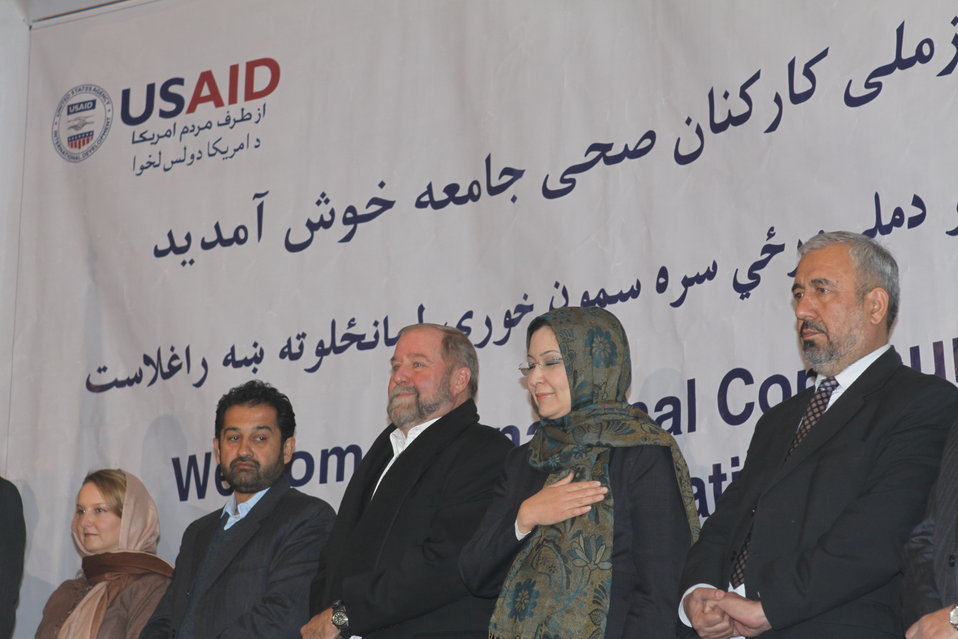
Community Health Workers Celebrated

Kabul, Afghanistan | December 5, 2010 — In support of the United Nations designated International Volunteer Day for Economic and Social Development, Afghanistan’s Ministry of Public Health celebrated its annual Community Health Worker Day today. Acting Minister of Public Health Dr. Suraya Dalil, USAID Senior Deputy Mission Director Robert Hellyer, other government officials, and international donors joined in recognizing the critical contribution of community health workers in Afghanistan and encouraging them to continue their voluntary support to their communities.
The event praised the contributions of the more than 22,000 volunteers throughout the country who deliver community level health-education, counseling, and services out of village health posts located in private homes. The Ministry of Public Health envisioned that community-based healthcare programs will actively encourage communities and families to adopt healthy lifestyles and behaviors, and provide families access to high quality and socially acceptable preventative medicine and life-saving services.
“We have 22,000 community health workers in Afghanistan that are able to implement the basic and standard medicines. They all have been trained through a job description,” said Minister Dalil. Addressing the health workers, she added, “I am proud and feel powerful that I have people like you.”
USAID-funded health projects collaborate closely with the Ministry of Public Health to improve the health and nutritional status of Afghans, provide quality primary healthcare, and promote healthy behaviors at the community and household-levels. USAID supported the training of more than 9,000 of the volunteer community health workers currently working in Afghanistan.
“On behalf of the American people, I congratulate the Community Health Workers for their diligence to gain the skills and knowledge necessary to serve their communities in this important role,” said USAID Senior Deputy Mission Director Hellyer. “USAID strongly supports community based health care and believes that quality community-based health services are essential to reaching Afghanistan’s Millennium Development Goals.”
To support the Basic Package of Health Services, USAID assisted in developing the community health worker training manual, helped train community health worker supervisors and master-trainers, facilitated in-service training, and produced and developed reporting tools, job aids, and education materials.